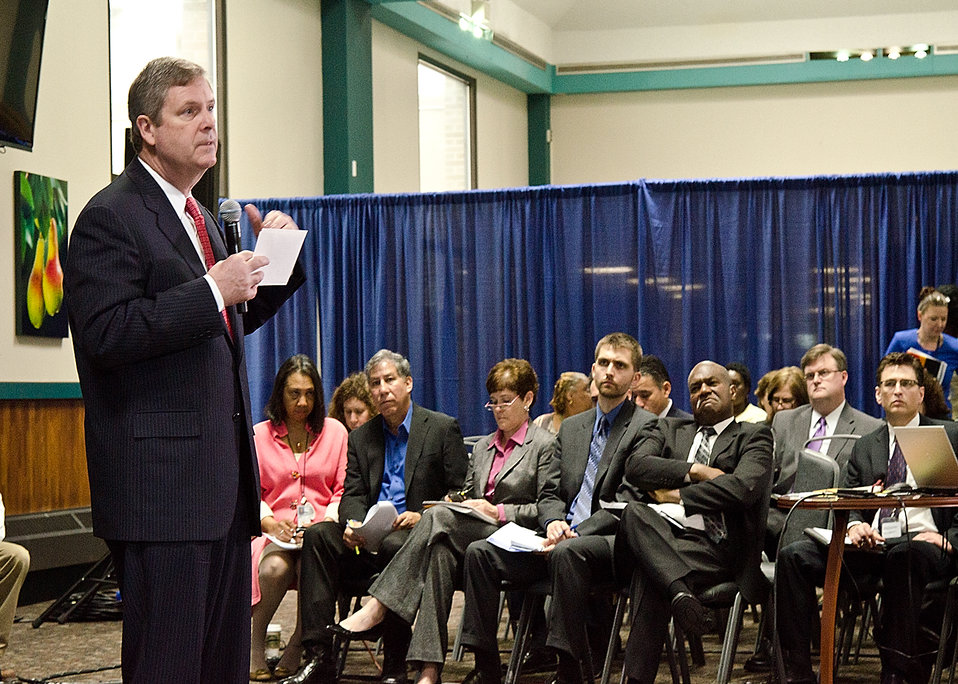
Agriculture Secretary Tom Vilsack offered U. S. Department of Agriculture (USDA) employees the opportunity to ask questions about the Blueprint for Stronger Service Initiative and hear directly from the Secretary Vilsack during the Ask The Secretary event held in the South Building Cafeteria, in Washington, D.C., on Wednesday, March 21, 2012, The Blueprint for Stronger Service Initiative aims to build a modern and efficient service organization that is closely timed with technological innovations - and better suited to respond to 21st century agricultural challenges.